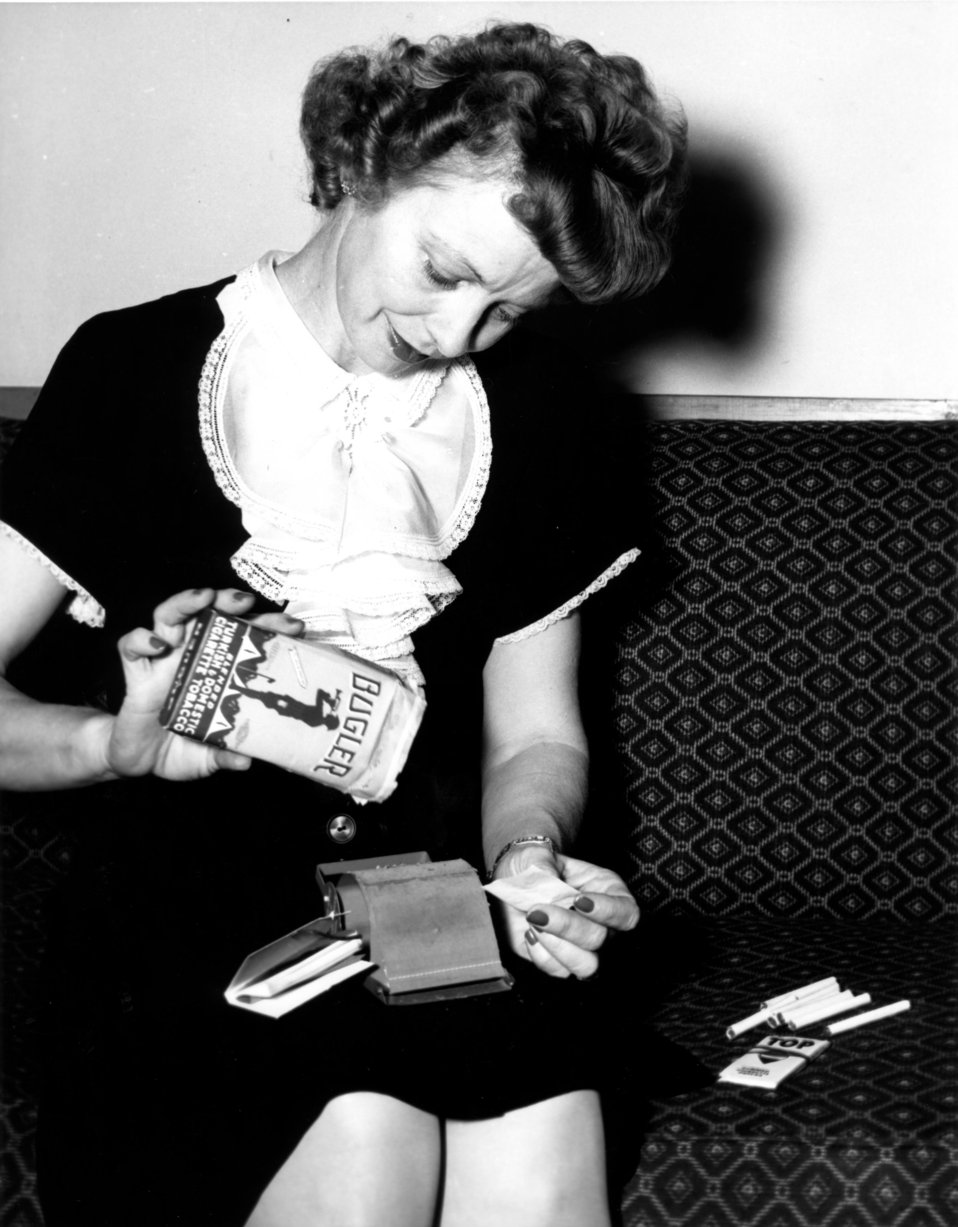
Daily Life at Oak Ridge